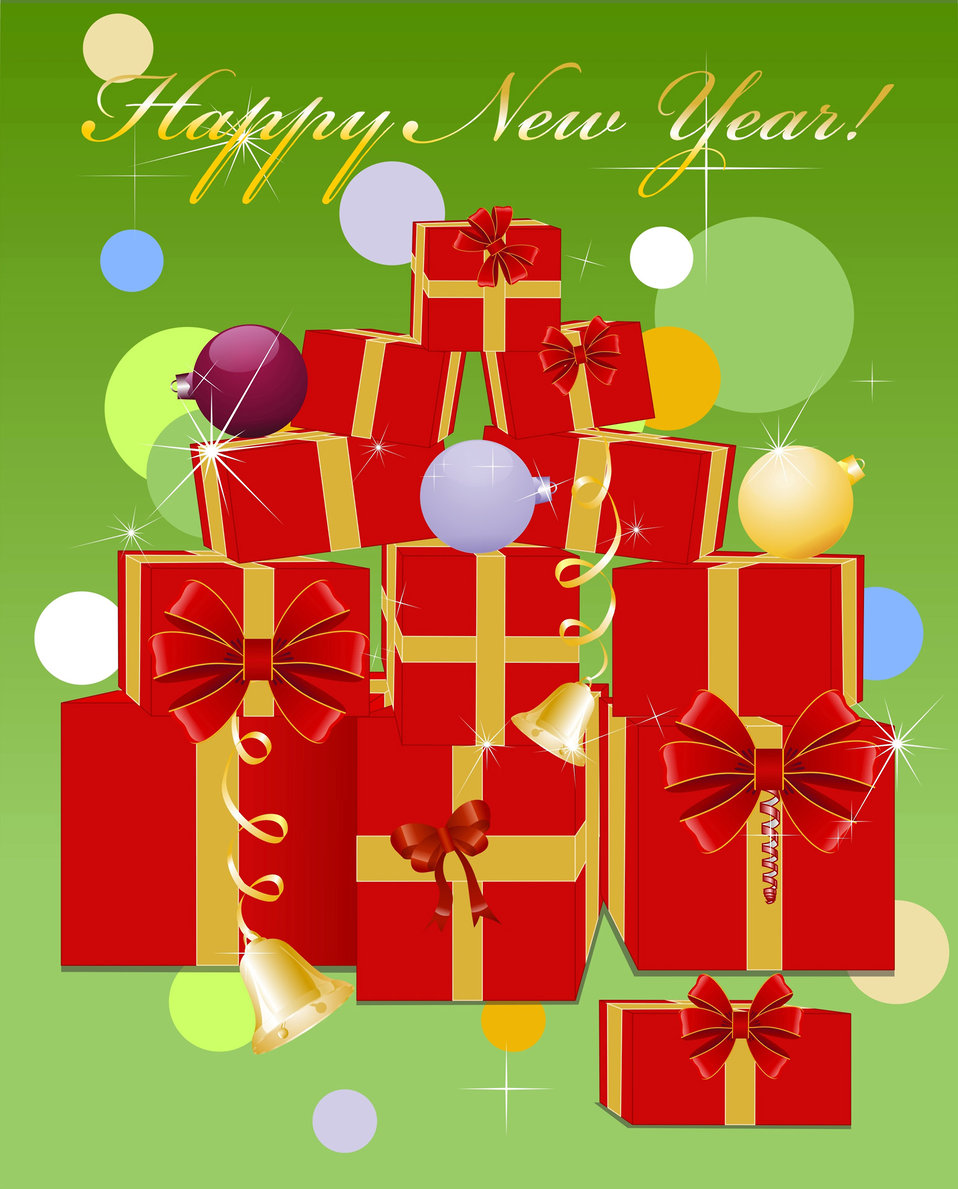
Happy new year!

Mountain of gifts for the new year!.